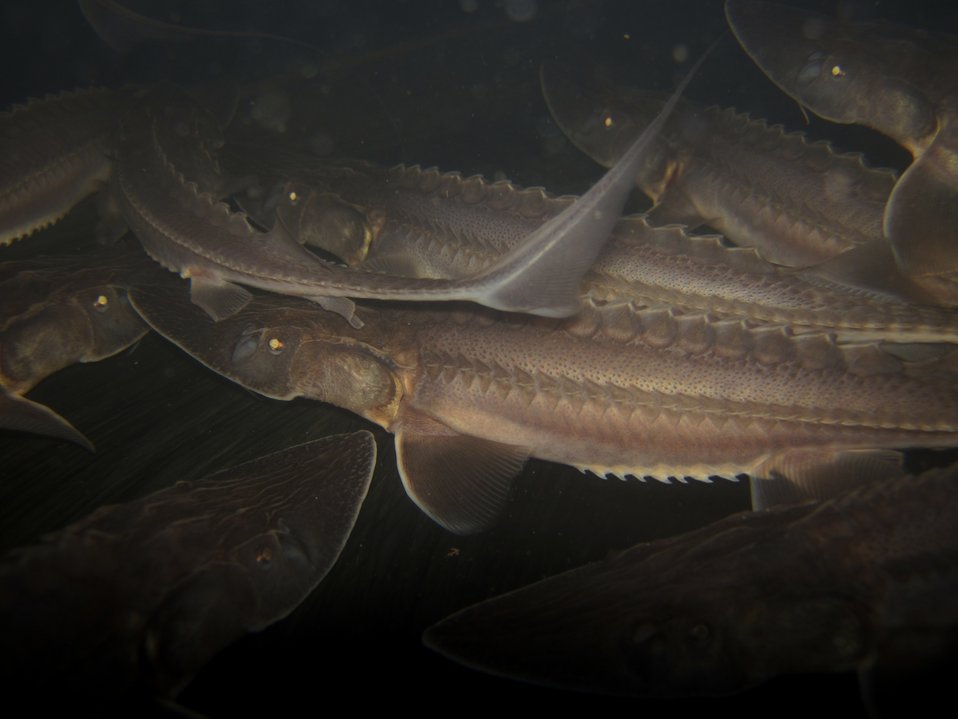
Swarm of Prehistoric Pallid Sturgeon

These prehistoric-looking fish are juvenile pallid sturgeon being propagated for release into the Yellowstone and Missouri Rivers.

Location: Garrison Dam NFH

Photo Credit: Rob Holm / USFWS

Photo Contest Entry #125